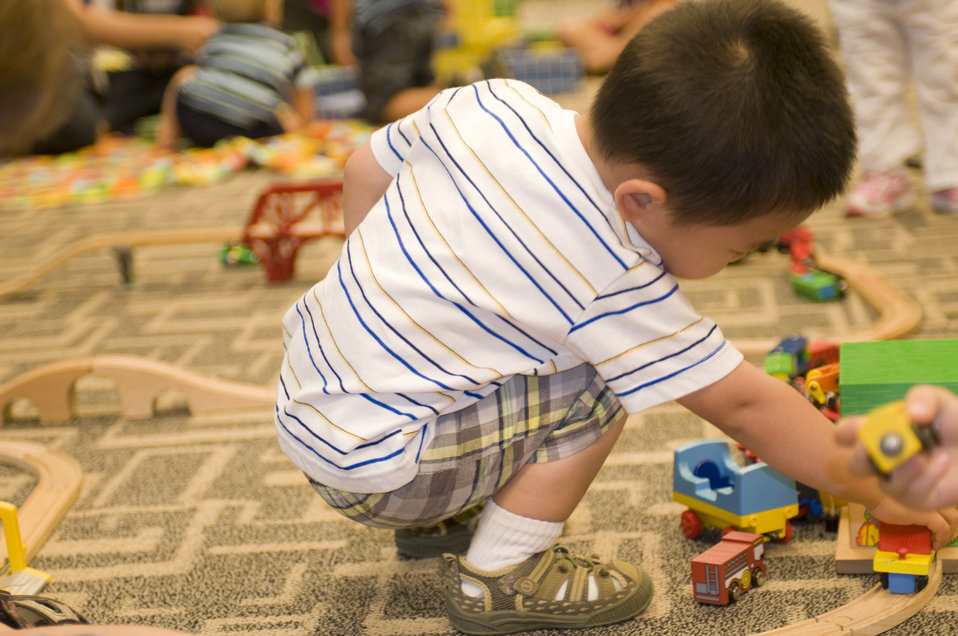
While in a daycare setting, this young boy was entertaining himself by playing with a small wooden toy car set, pushing the little cars along the grooved wooden track.